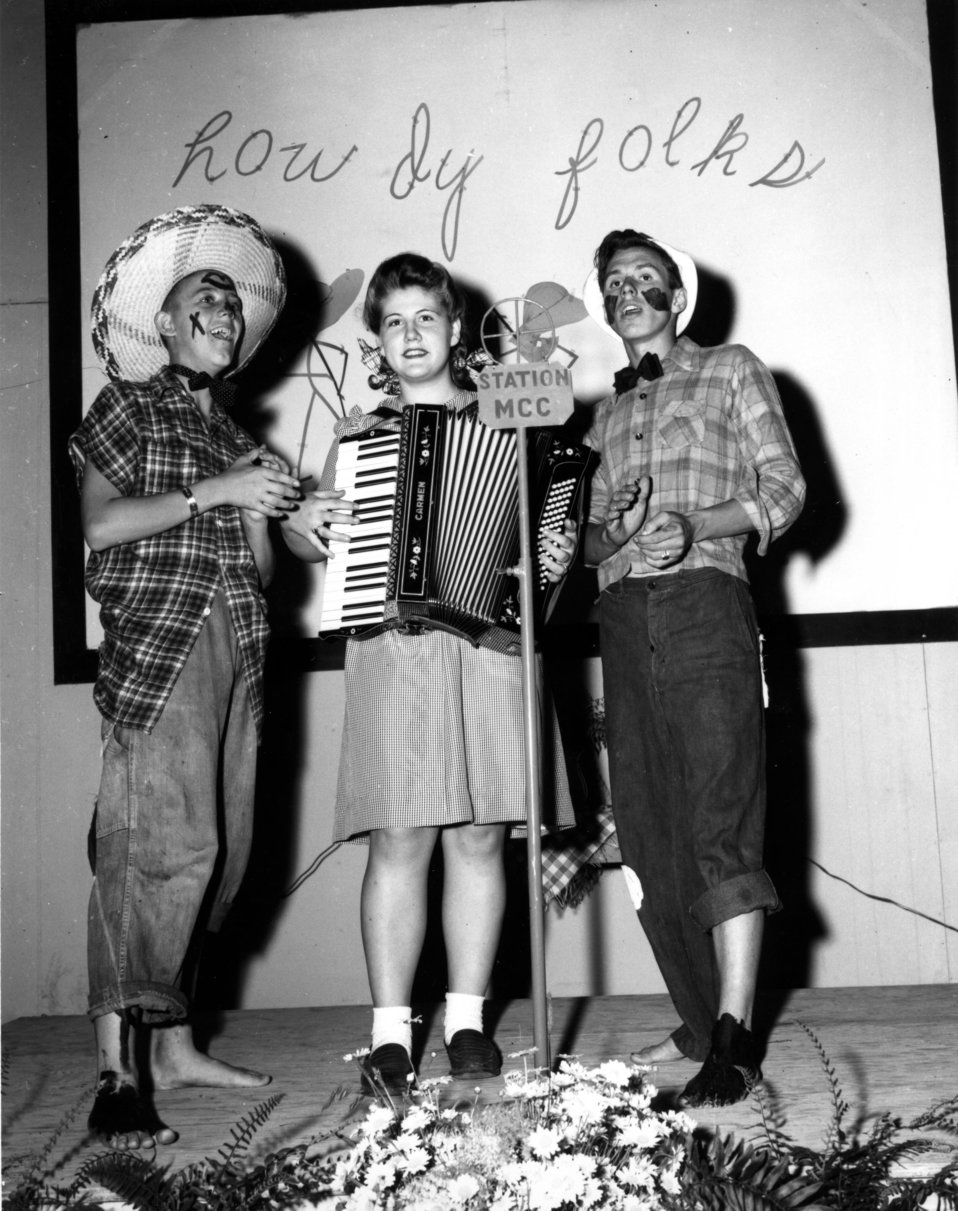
Recreation at Oak Ridge